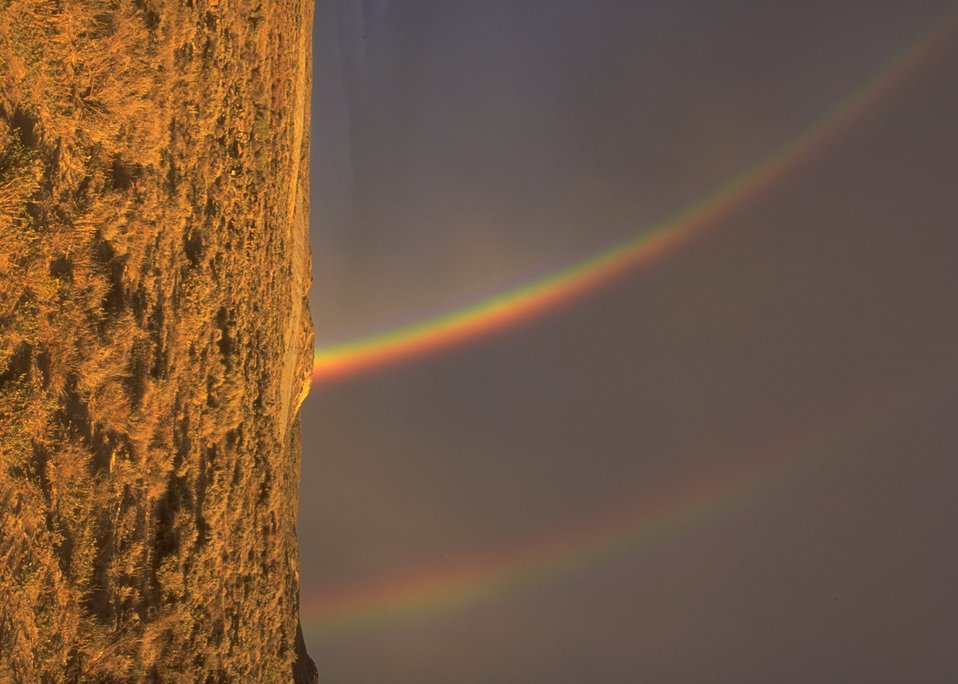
Rainbow in rangeland near OHV Sand Dunes Area, Rock Springs Field Office.